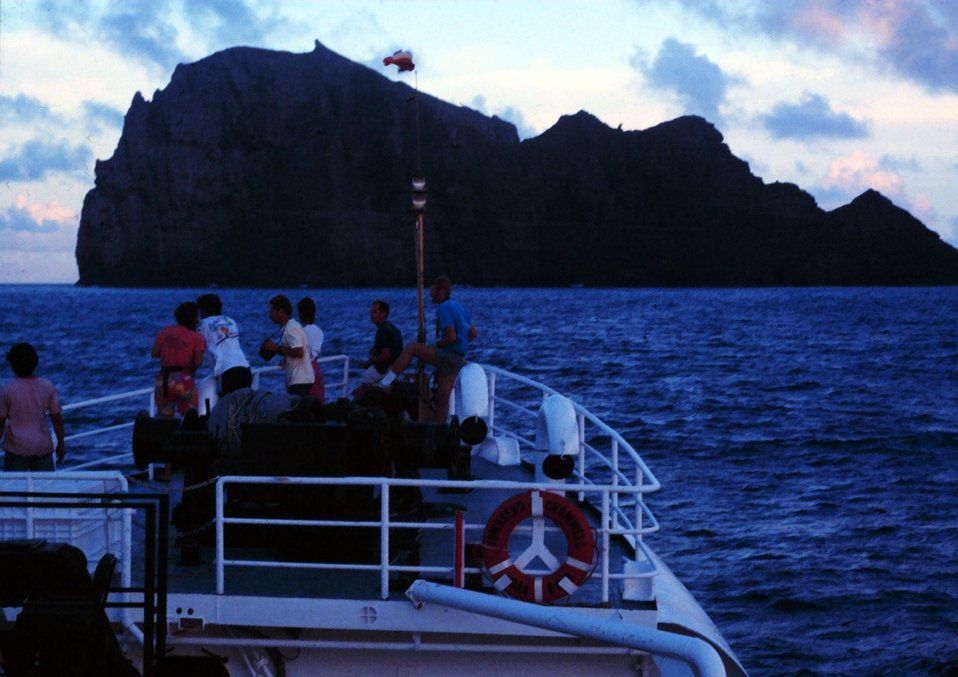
Science party on the bow taking in the sights while approaching Necker Island on the NOAA Ship TOWNSEND CROMWELL